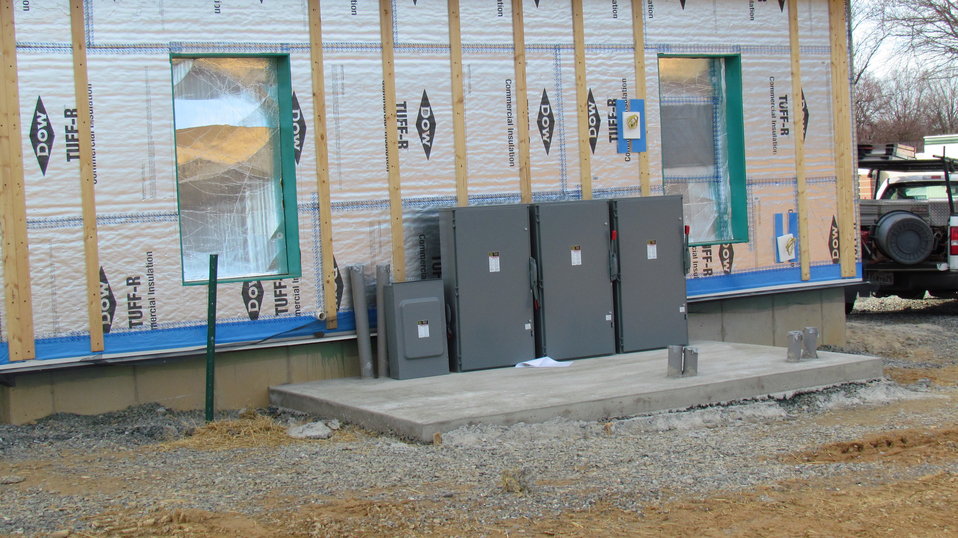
Electrical switchgear installed behind garage.